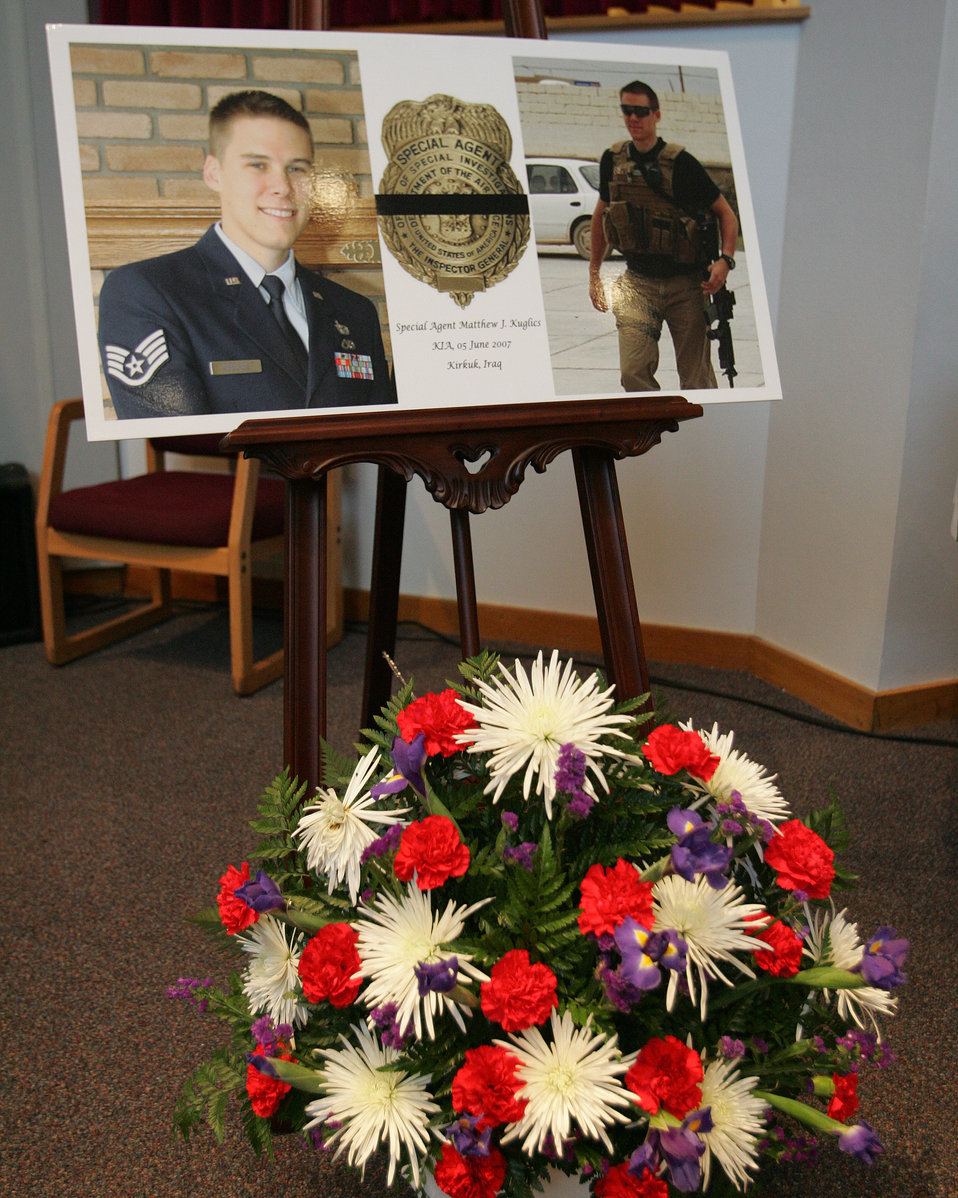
Agent Kuglics memorial

A poster of Special Agent Matthew Kuglics on display at Lackland Air Force Base's Freedom Chapel June 18 stands in tribute to his service to his country. Agent Kuglics was killed in action by an improvised explosive while supporting Operation Iraqi Freedom.